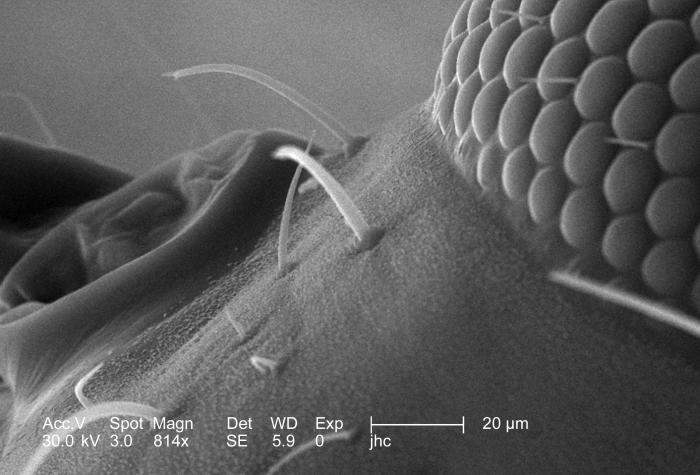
At a magnification of 814x, this scanning electron micrograph (SEM) revealed the exoskeletal surface of an unidentified green bug, found deceased on the grounds in the suburbs of Decatur, Georgia, attached to a deceased, unidentified caterpillar. The exoskeleton on insects is commonly adorned by a myriad of protuberances, some of which are to allow its owner to attract a mate, others to detect changes in its environment, and still others to act as protective mechanisms by which the organism can thwart a foe, or avoid being eaten by a predator. At this low magnification, the insects sensorial "hairs", or "setae", are visible, which allow the organism to detect changes in environmental temperature, tactile stimuli, and chemical queues.